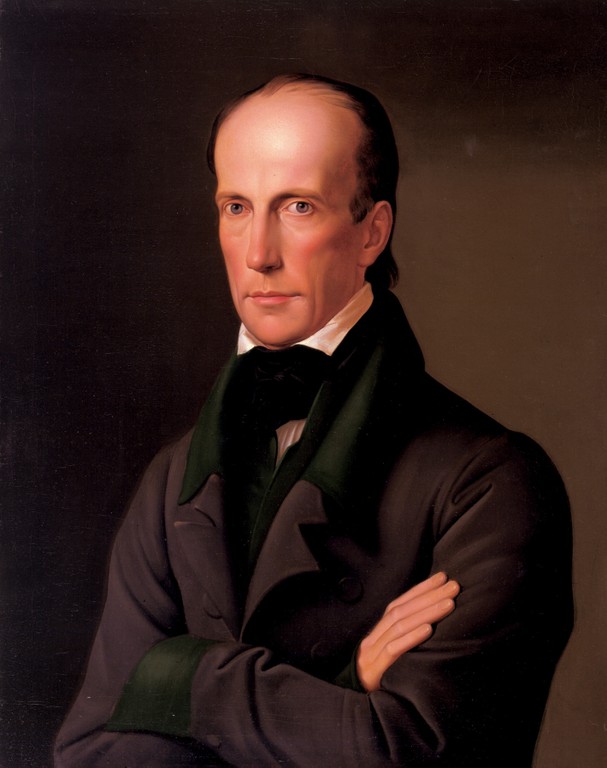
Leopold Kupelwieser 001